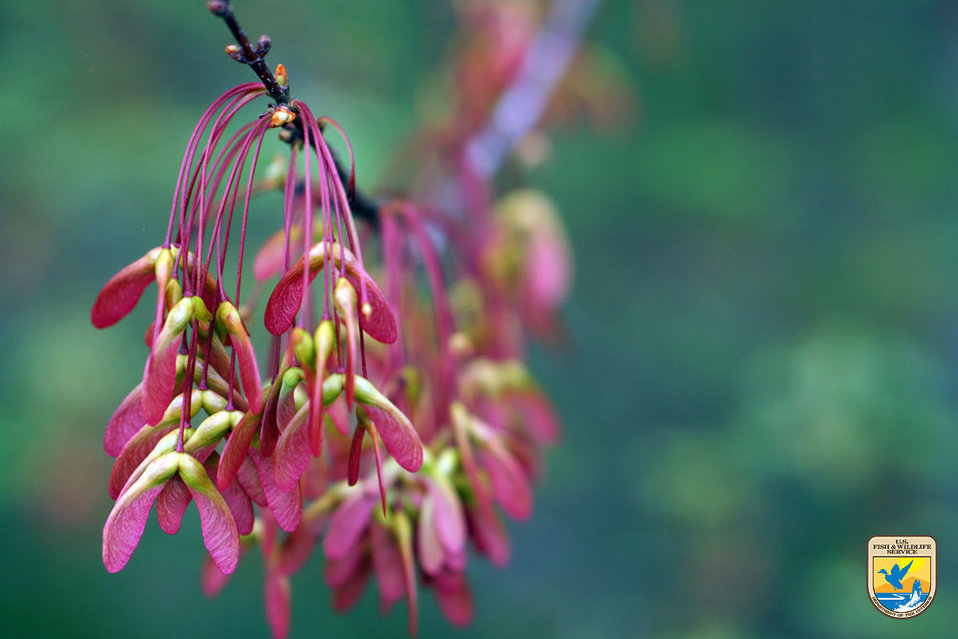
Maple Leaves - Region 4

Southern Appalachian Mountain bogs are one of North America’s rarest habitats. They’re vital to several endangered species, and provide important habitat for several migratory birds of conservation concern.